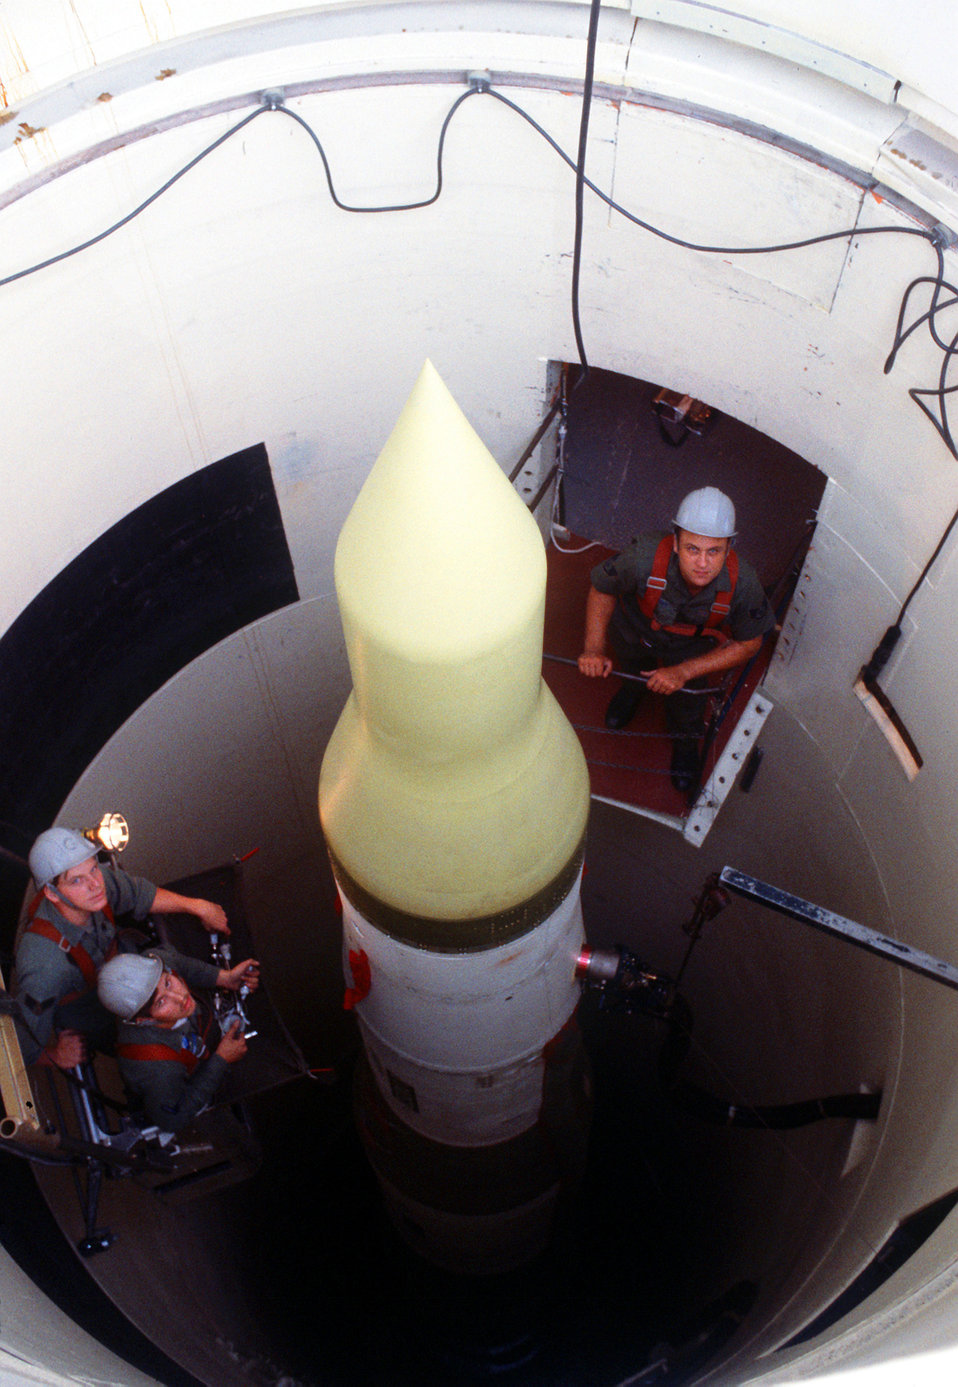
Oscar-01 Launch Control Facility

(Left to right) Senior Airmen David Wade and Eugene Clark and Staff Sgt. Kevin Gorney, missile maintenance crewmen, perform an electrical check on an LGM-30F Minuteman III intercontinental ballistic missile in its silo Jan. 1, 1980.